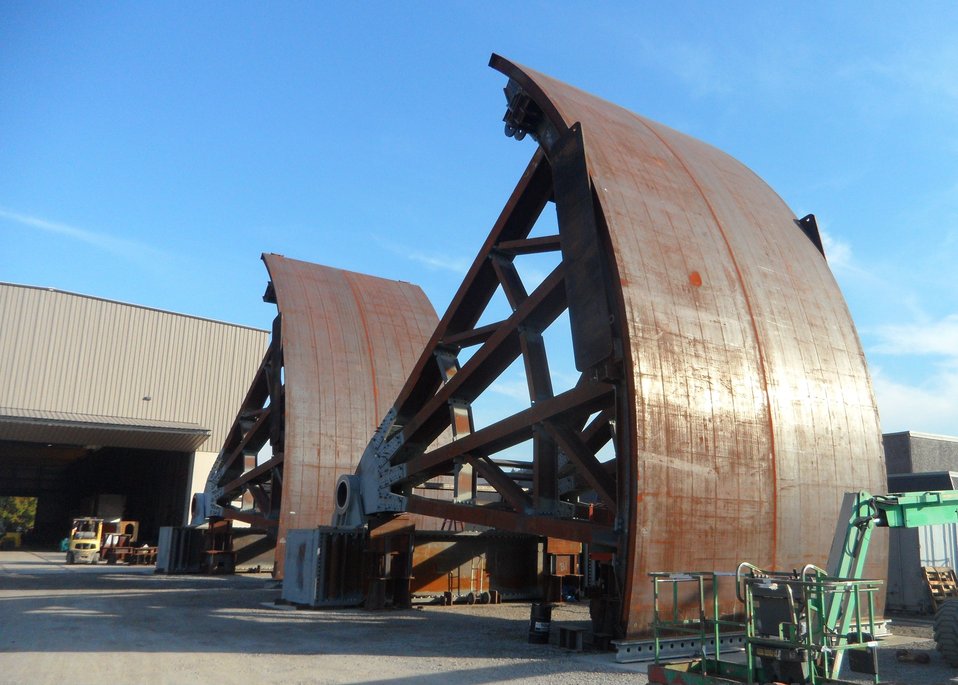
Giant Folsom spillway gates nearly ready for 600-mile journey to dam

Tainter gates are ready for review after being fully assembled at the Oregon Iron Works facility in Vancouver, Wash. Gate components are tested to ensure precise design requirements are met, so they will fit and function correctly when installed on the new Folsom Dam auxiliary spillway near Folsom, Calif. When complete, the spillway will allow operators to release water from Folsom Lake earlier and more safely during large storms to help reduce the risk of flooding for the Sacramento region.